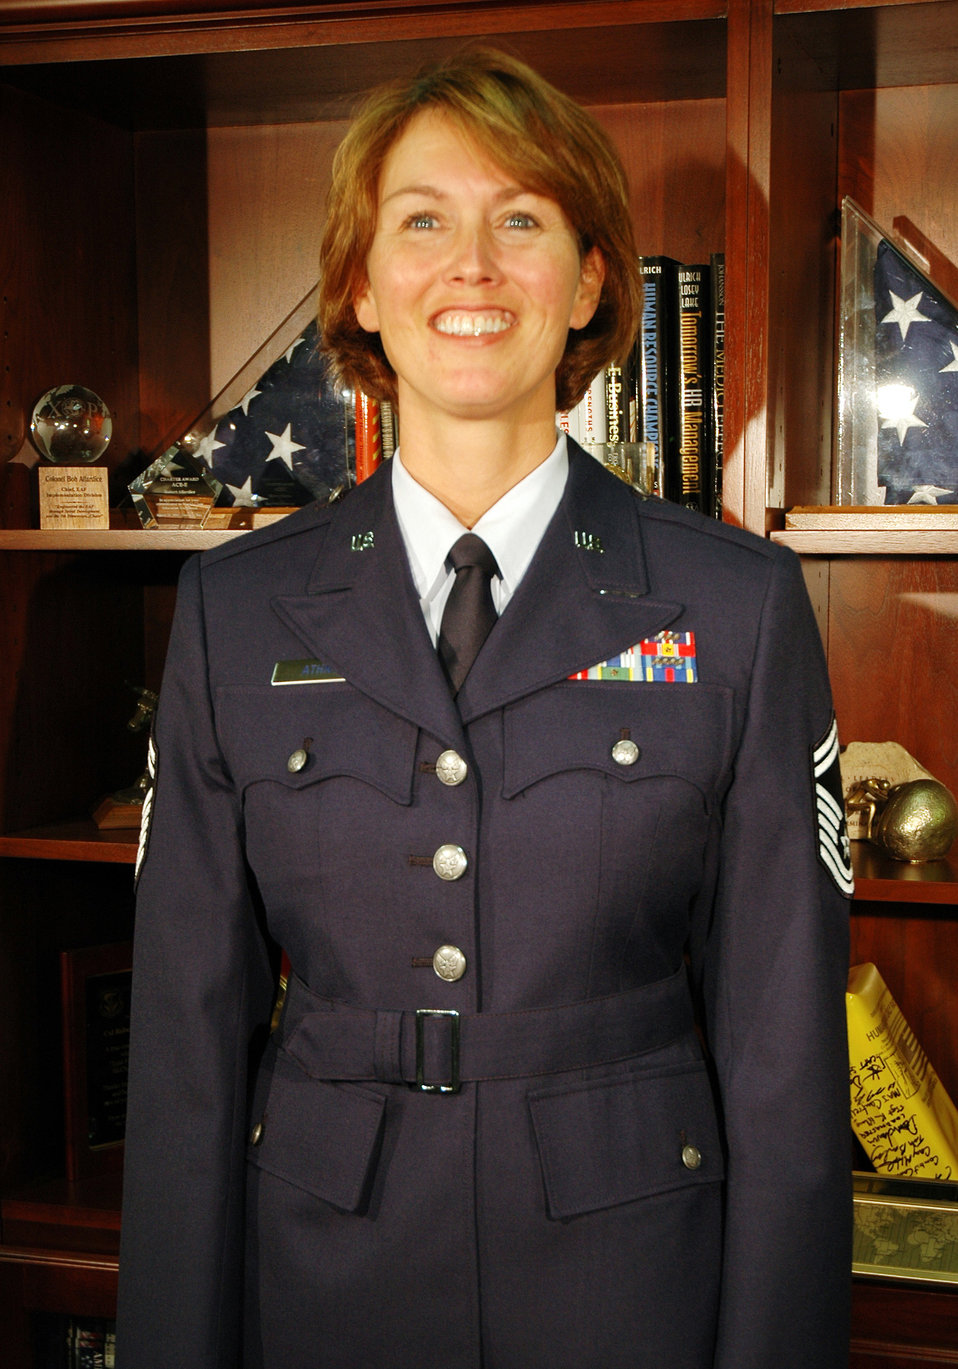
New service dress prototypes peak interest

Senior Master Sgt. Dana Athnos shows off a prototype of the Hap Arnold heritage coat in the Pentagon on Monday, May 15, 2006. Sergeant Athnos is a member of the Air Force uniform board.